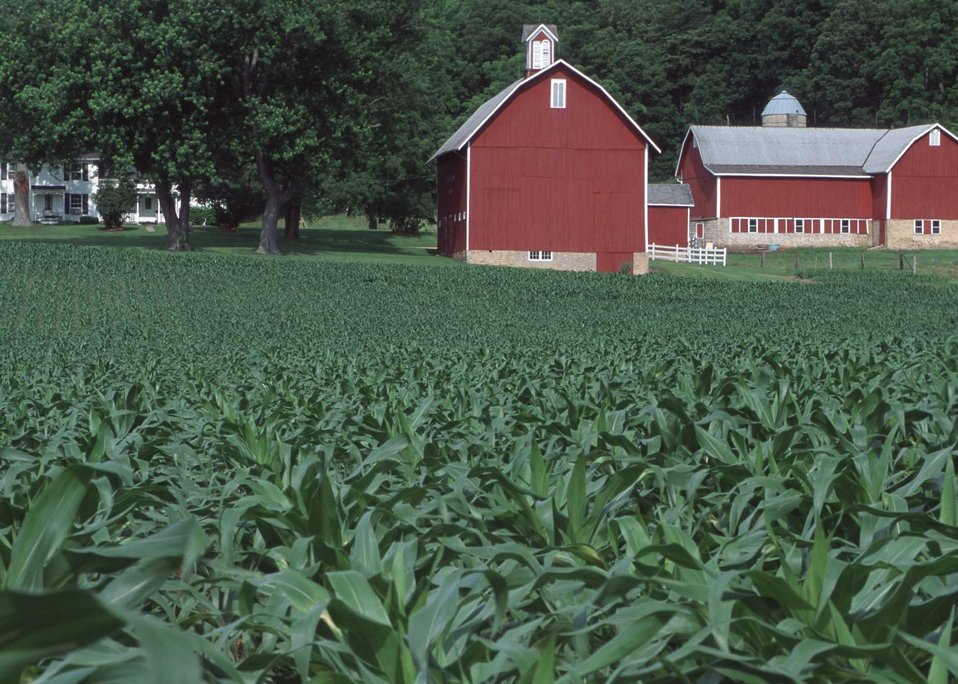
Century Farmstead in Dane County, Wisconsin.